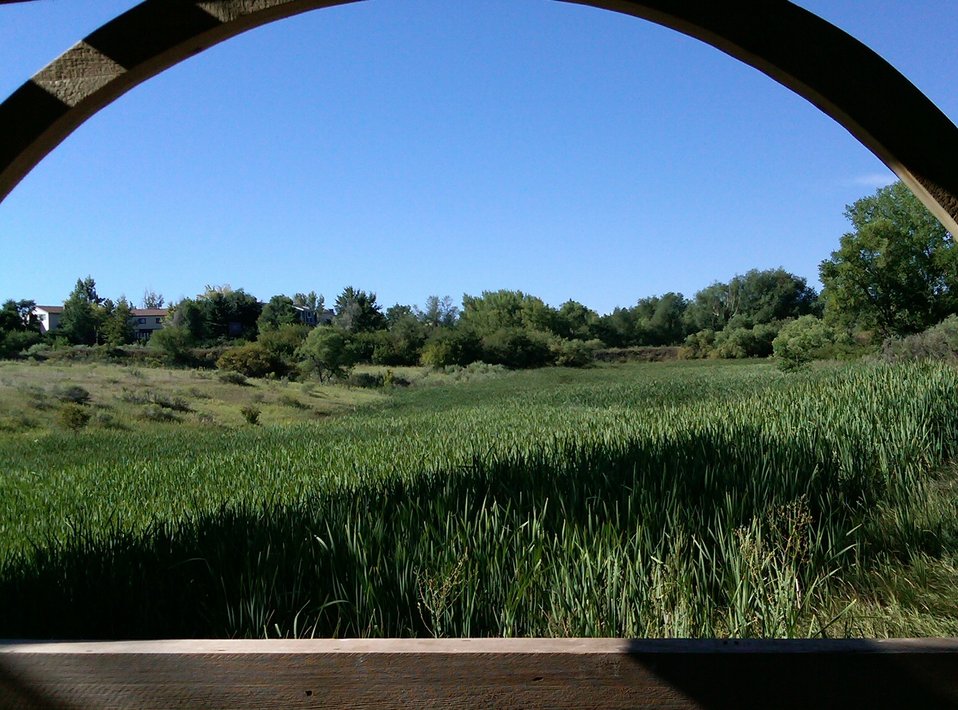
Eagle Scout - Gazebo View